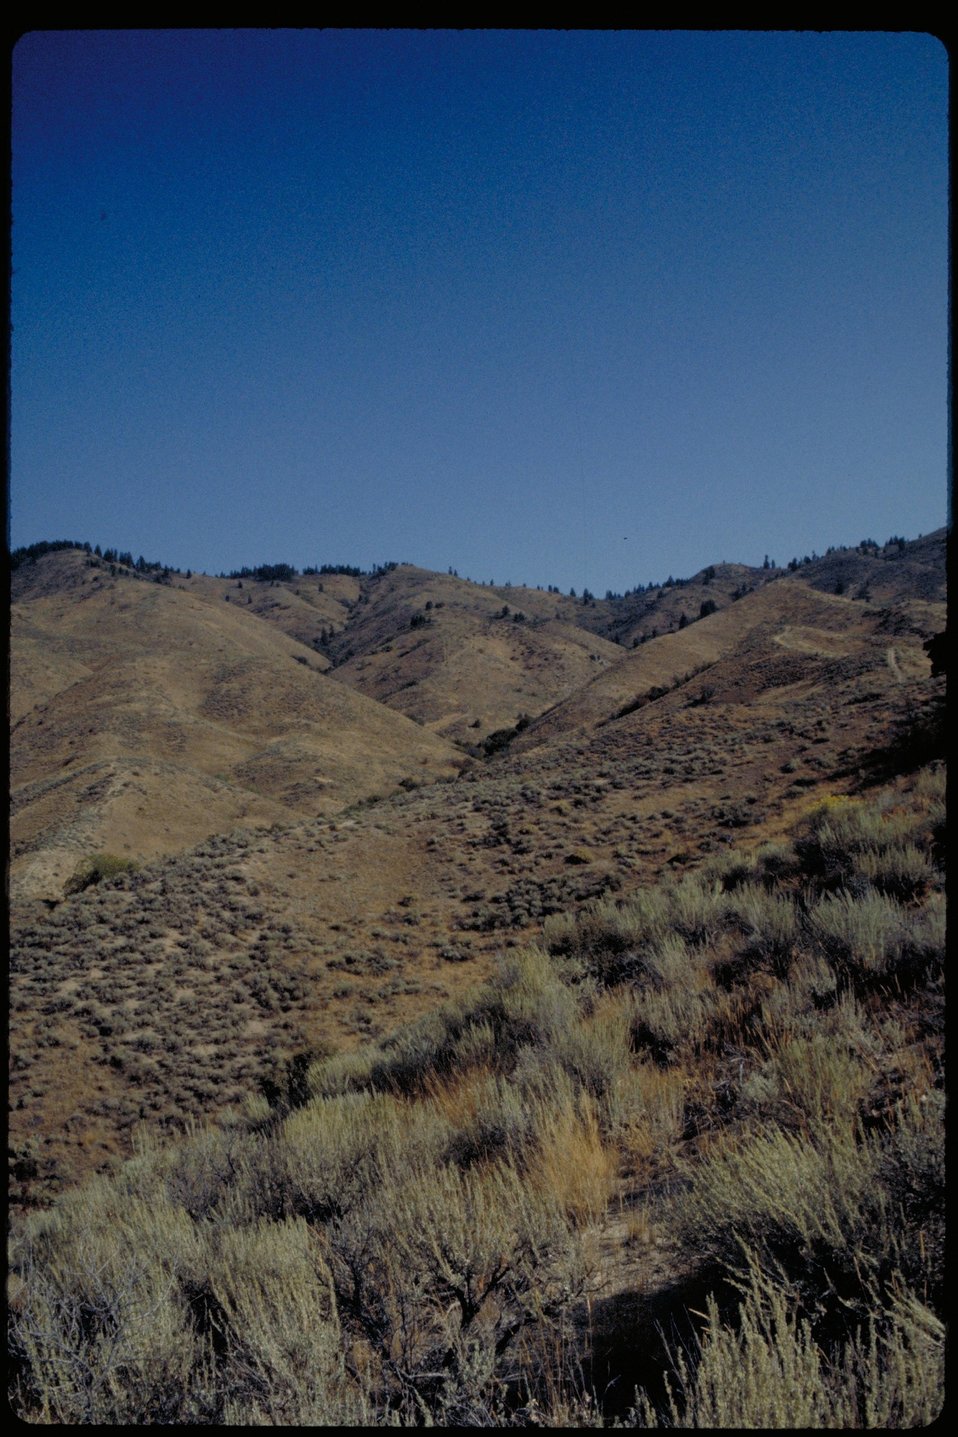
Cottonwood Canyon area shot Boise Front Four Rivers Field Office LSRD Lower Snake River District